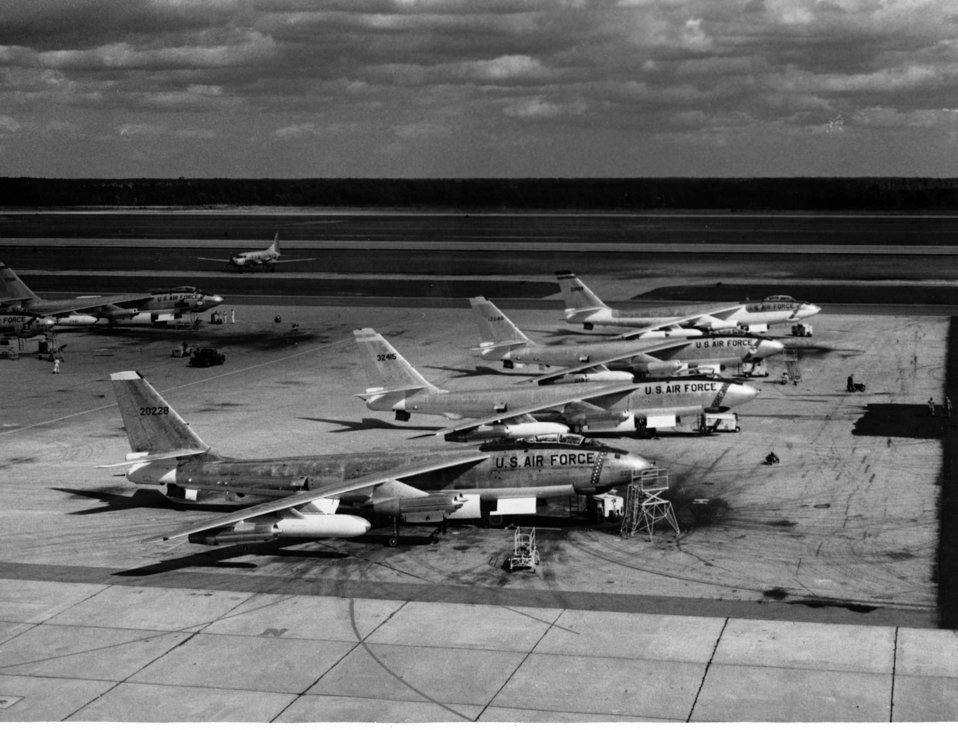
B-47E

1950's -- The B-47E was an improved version of the -B model and more than 1500 were produced by Boeing, Douglas and Lockheed. Improvements incorporated into the -E model Stratojet included a more powerful version of the General Electric J47 turbojet and Rocket Assisted Take Off packs with 18 or 33 rockets which were jettisoned after use. Other features of the B-47E included 20mm cannons in the tail instead of the .50-cal. machine guns of the -B model and upgraded avionics including the A-5 fire control system.